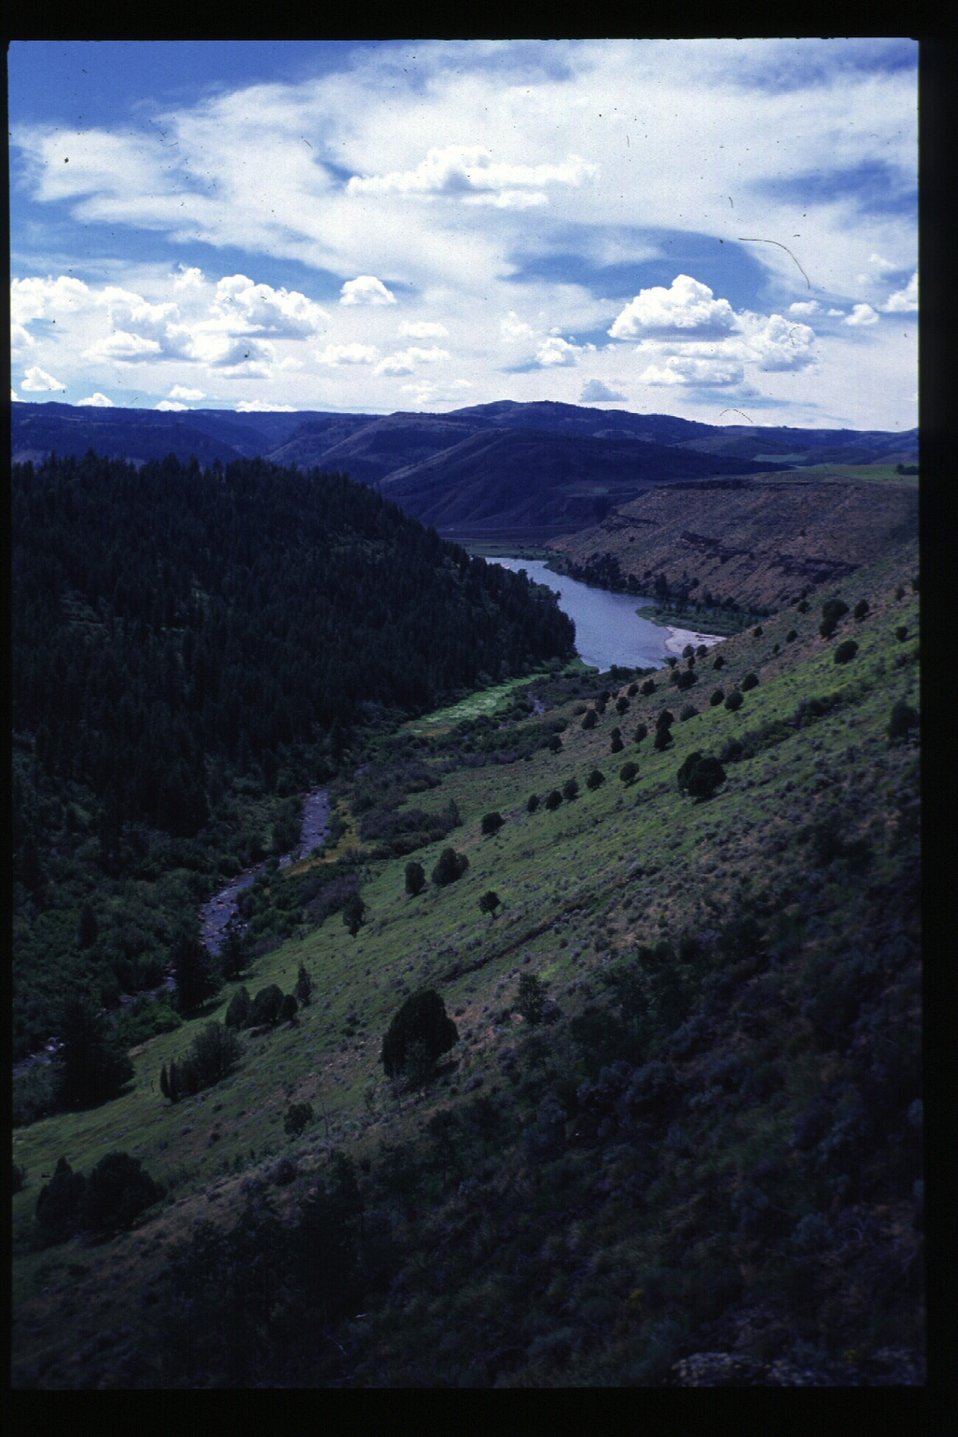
Scenic South Fork of Boise River Four Rivers Field Office LSRD Lower Snake River District